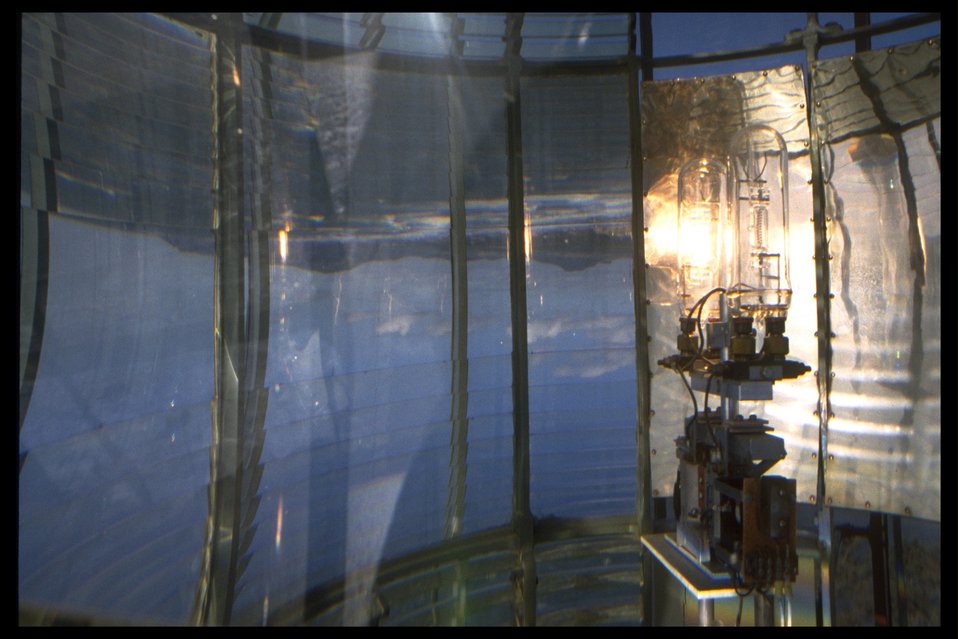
The lightbulb (1000 watt lens) on the interior of the Yaquina Head lighthouse.